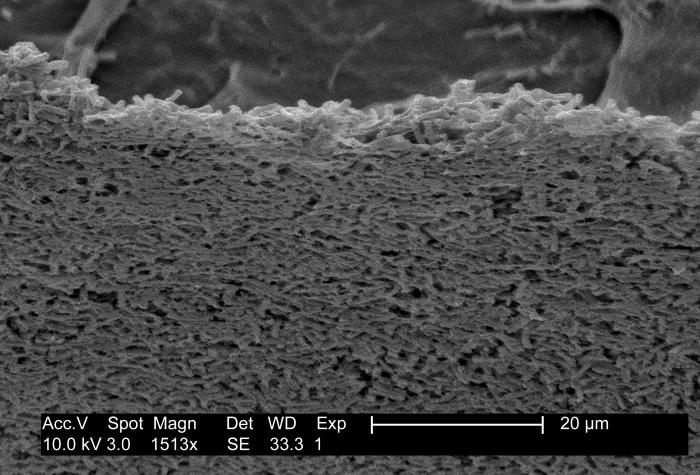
This micrograph depicts Gram-positive C. difficile bacteria from a stool sample culture obtained using a .1�m filter.